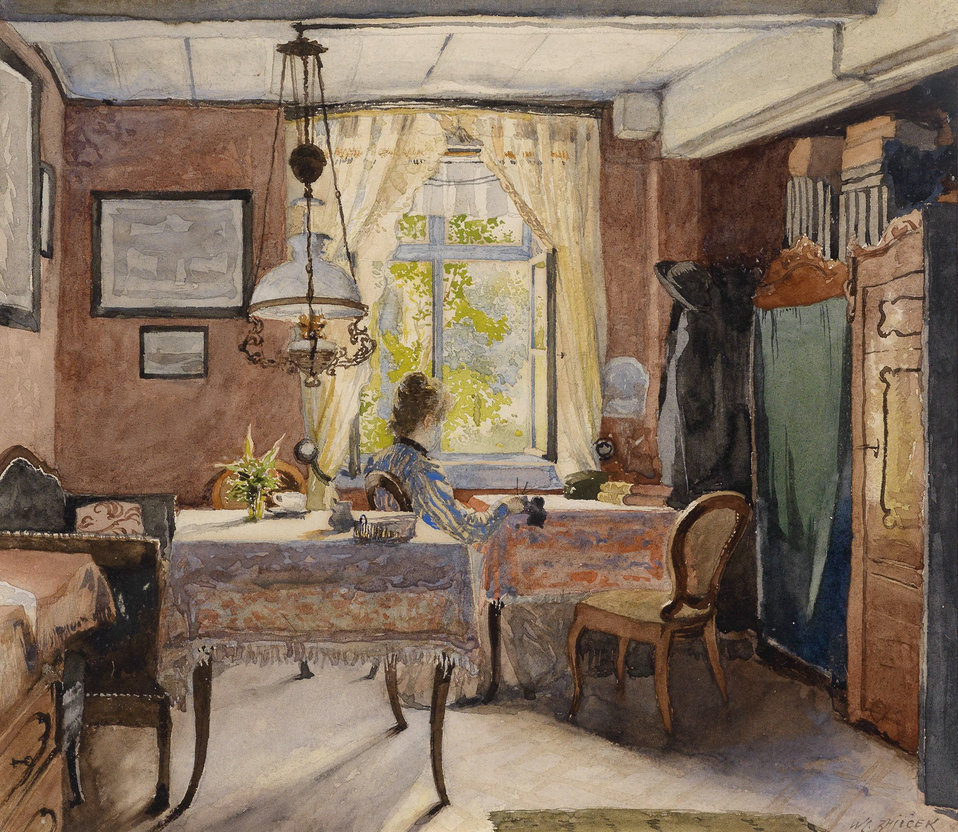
Sonniges Interieur mit einer Frau am Fenster, signiert W. Zajicek, Aquarell auf Papier, 21,5 x 25 cm